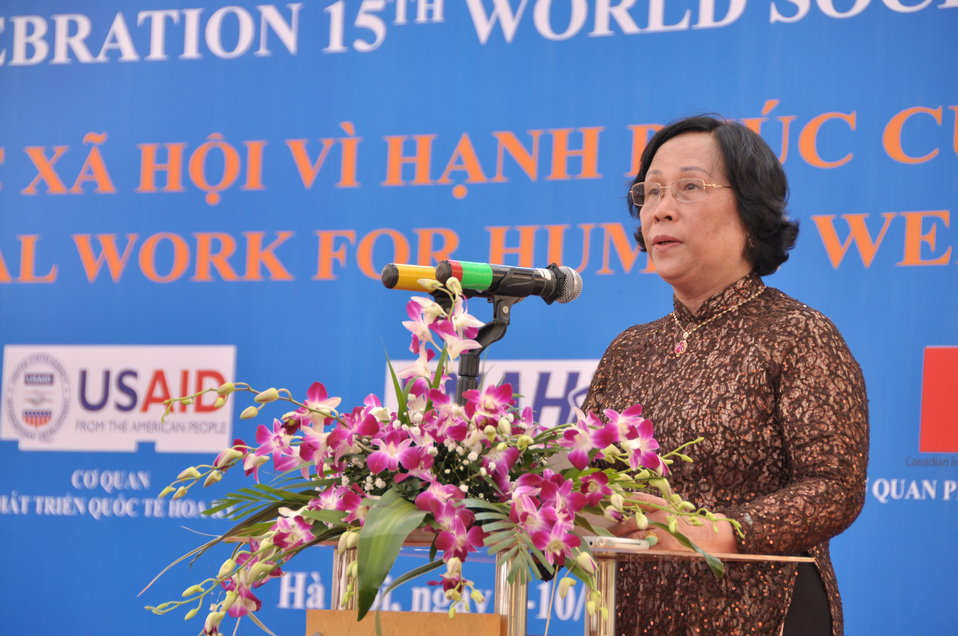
Mdm Phạm Thị Hải Chuyền, Minister of Labour, War Invalids and Social Affairs speaks at the Social Work Day event in Hanoi

Photo: @USAIDVietnam, November 9, 2012